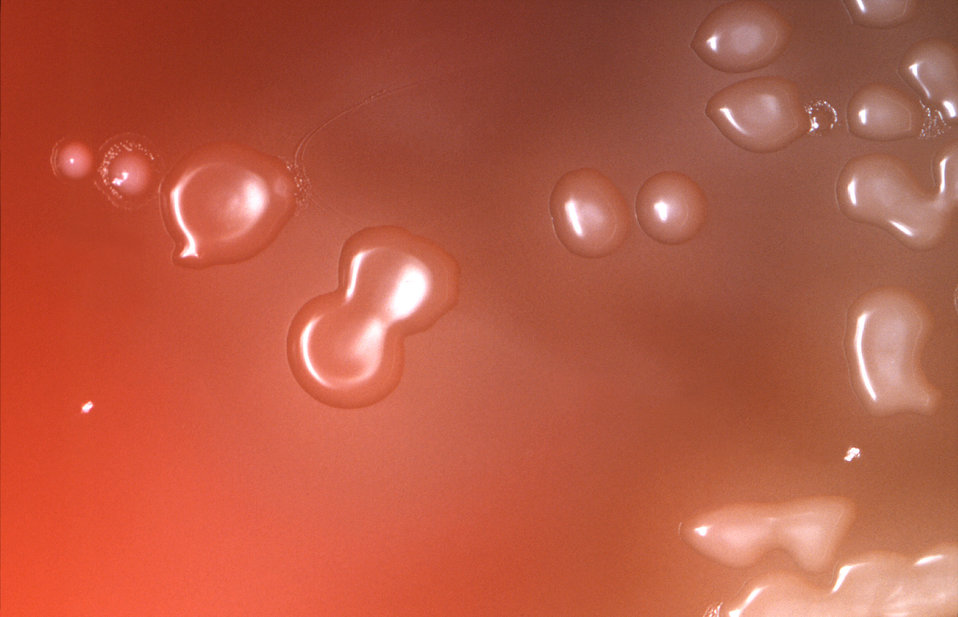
Under an approximate 10X magnification, this image depicts the colonial characteristics displayed by Streptococcus pneumoniae bacterial colonies that were grown on primary isolation medium, consisting of trypticase soy agar containing 5% sheep's blood, as well as 5mg of gentamicin/ml. See PHIL 10863 for another view of this culture.